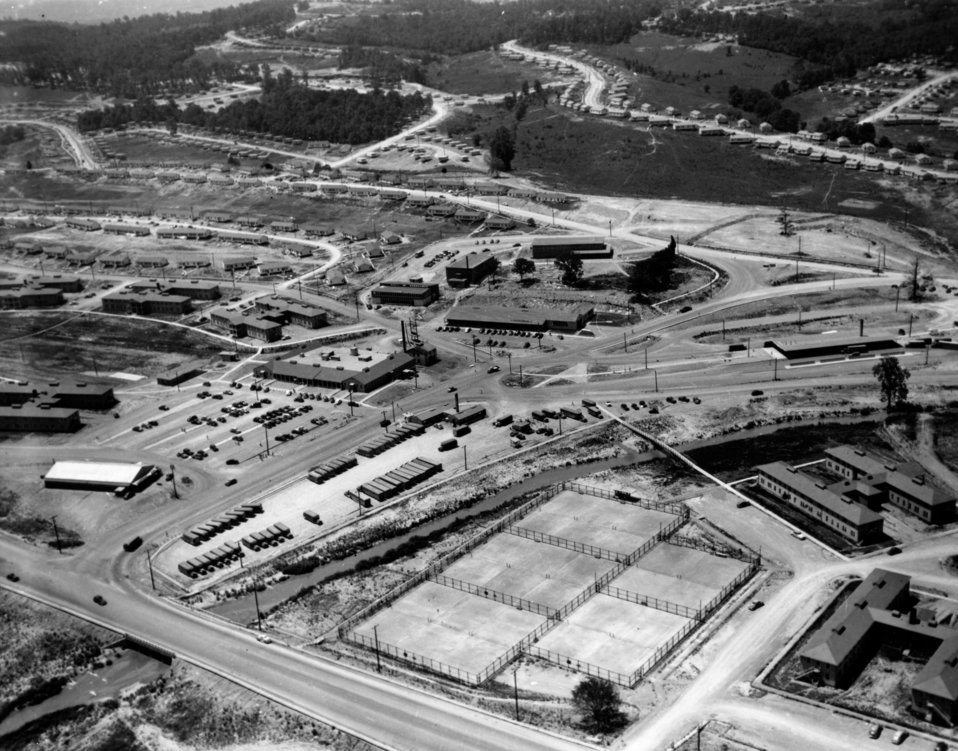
Aerial of Oak Ridge